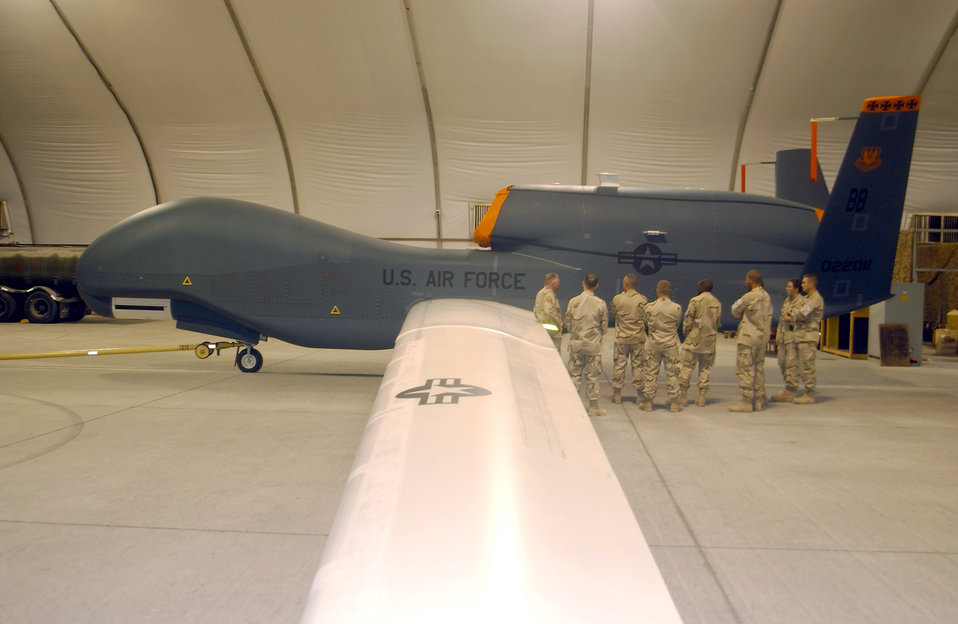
Maintaining the Global Hawk

Master Sgt. Robert Holland (left) talks to a group of deployed Airmen Oct. 12 about the RQ-4 Global Hawk. Sergeant Holland is one of the maintainers assigned to keep the aircraft flying. The Airmen, deployed from Schriever Air Force Base, Colo., and assigned to the 380th Air Expeditionary Wing, were given a morning briefing of the unmanned aircraft's capabilities.